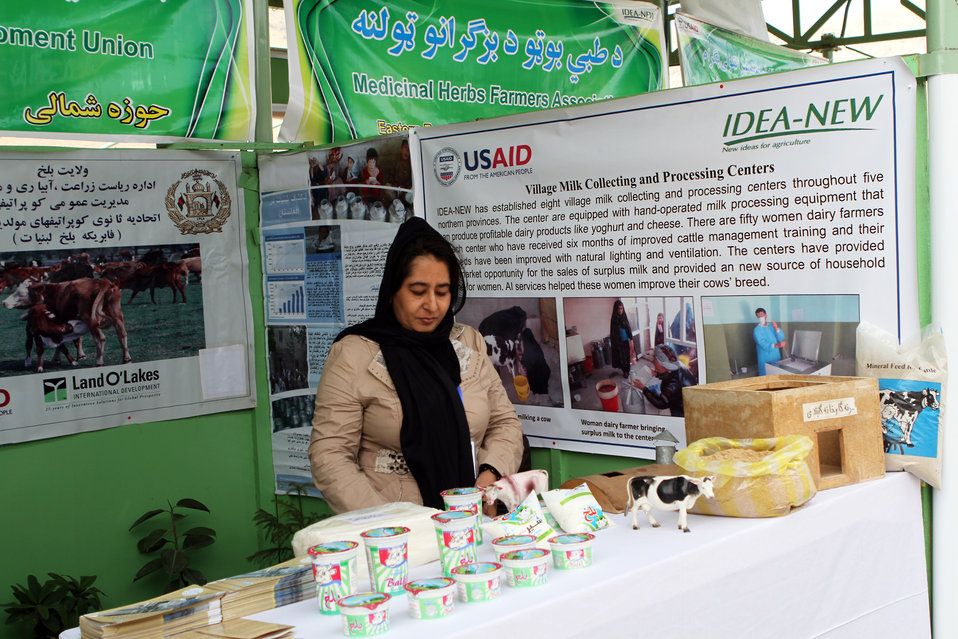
Agfair event